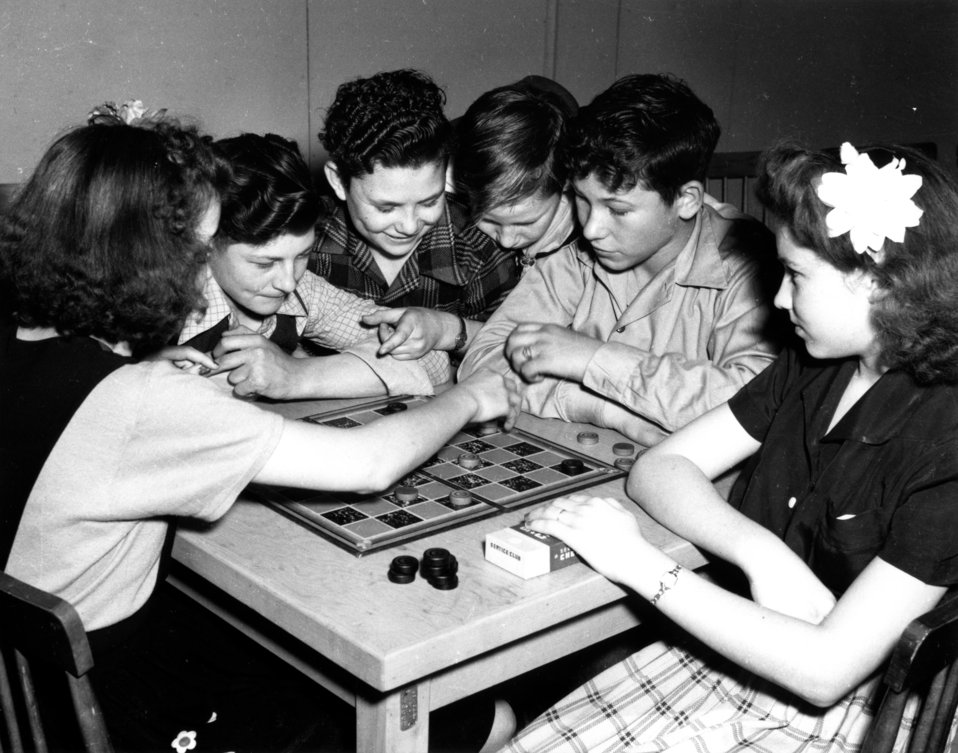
Recreation at Oak Ridge